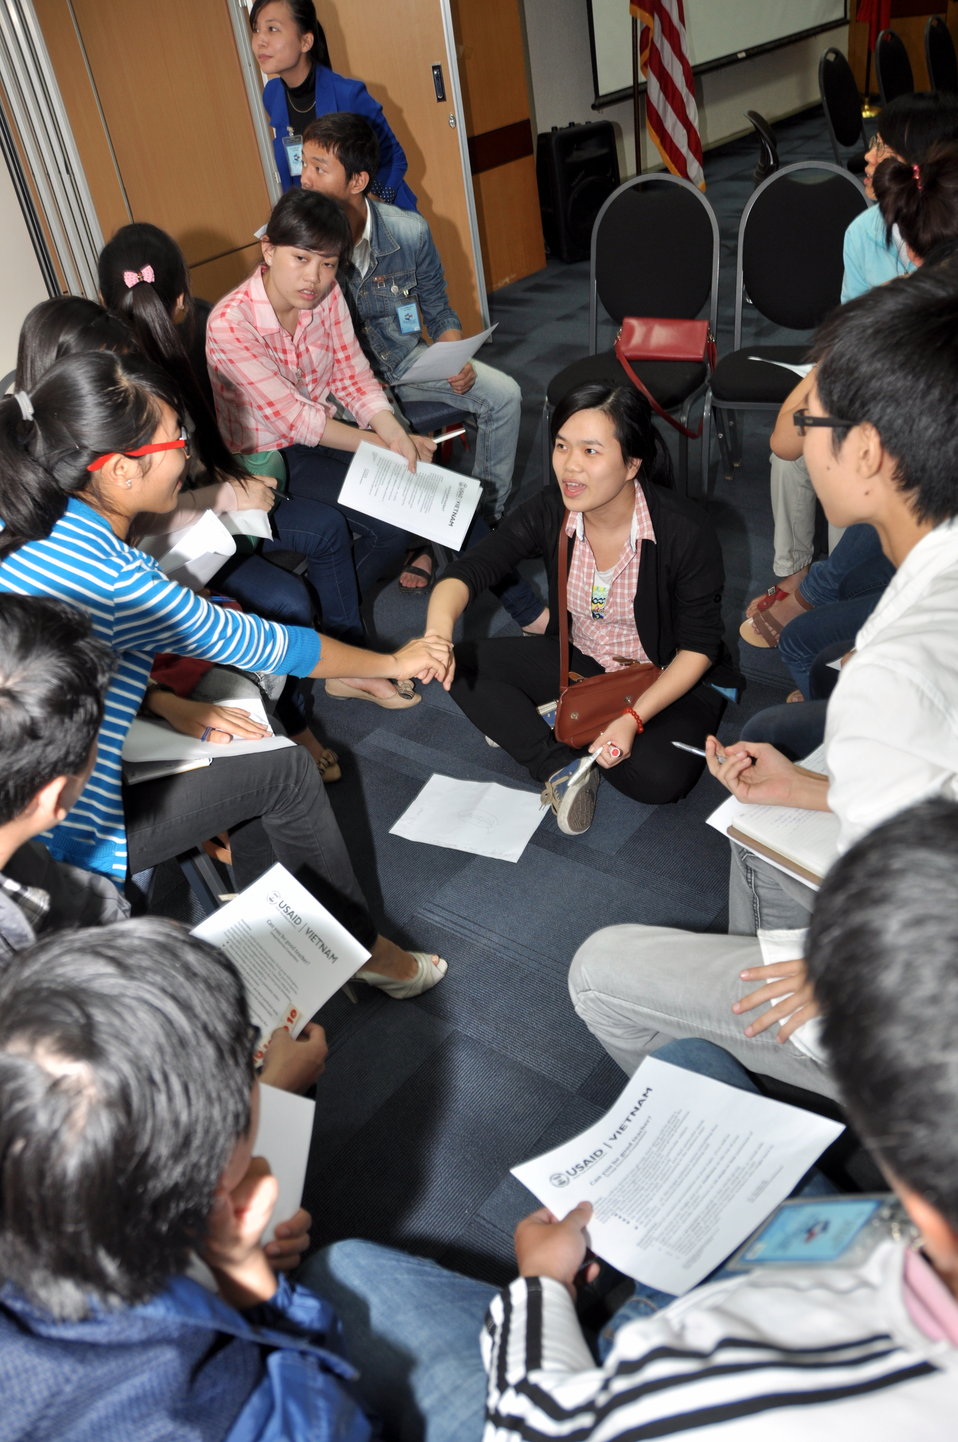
Students join the ‘USAID and Higher Education in Vietnam’ talk

Photo: @USAIDVietnam, November 19, 2012